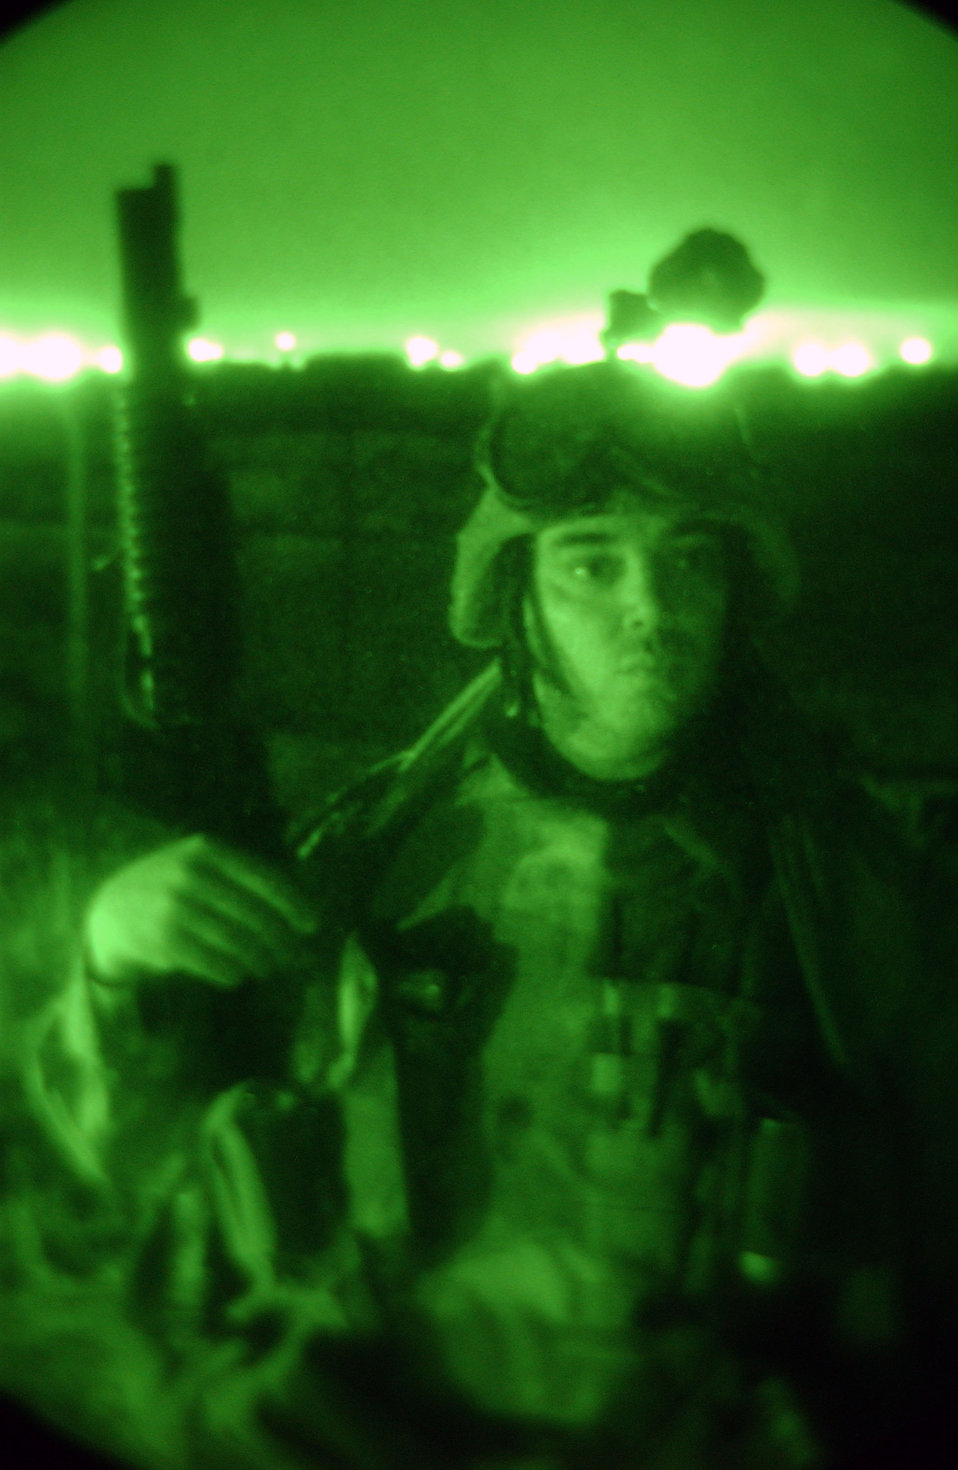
Night patrol

IRAQ -- Senior Airman Christopher Adams scans the desert during a patrol of areas surrounding Tallil Air Base April 27. Airman Adams is a security forces journeyman assigned to the 407th Expeditionary Security Forces Squadron.